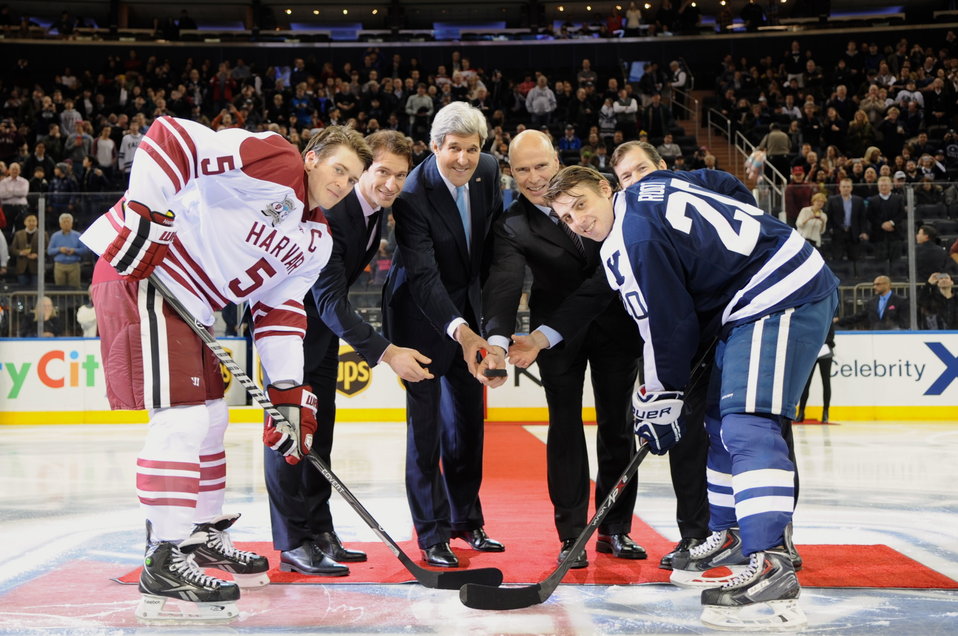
Secretary Kerry Drops Puck at Harvard-Yale Hockey Game

U.S. Secretary of State John Kerry joins the captains of the Harvard and Yale hockey teams, along with current New York Rangers player Dominic Moore and retired players Mark Messier and Mike Richter, for the ceremonial puck drop before the two rival university teams played at Madison Square Garden in New York, NY, on January 11, 2014.